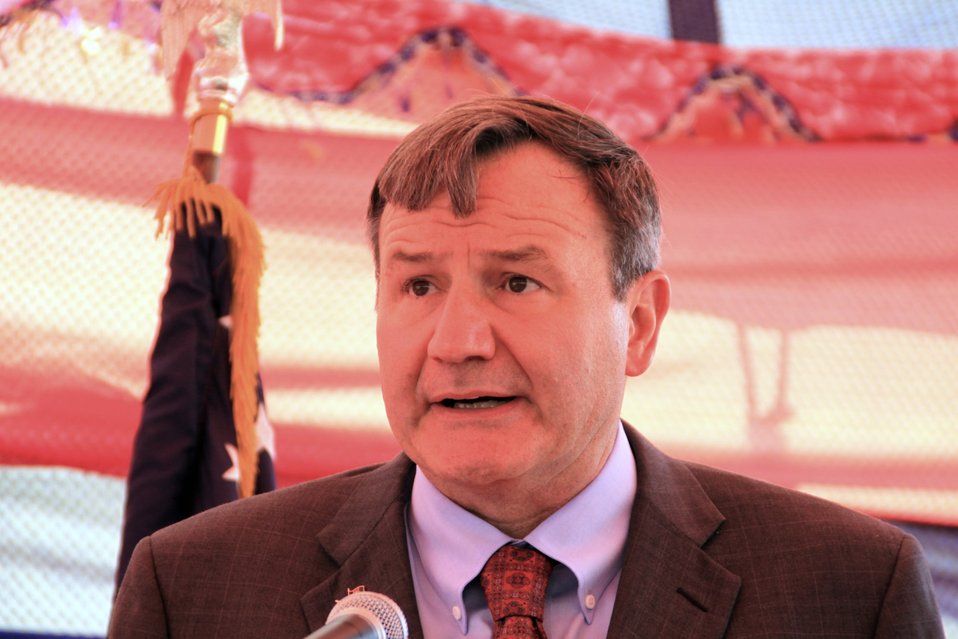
Badam Bagh Farm

Ambassador Eikenberry gives his remarks at the signing ceremony.